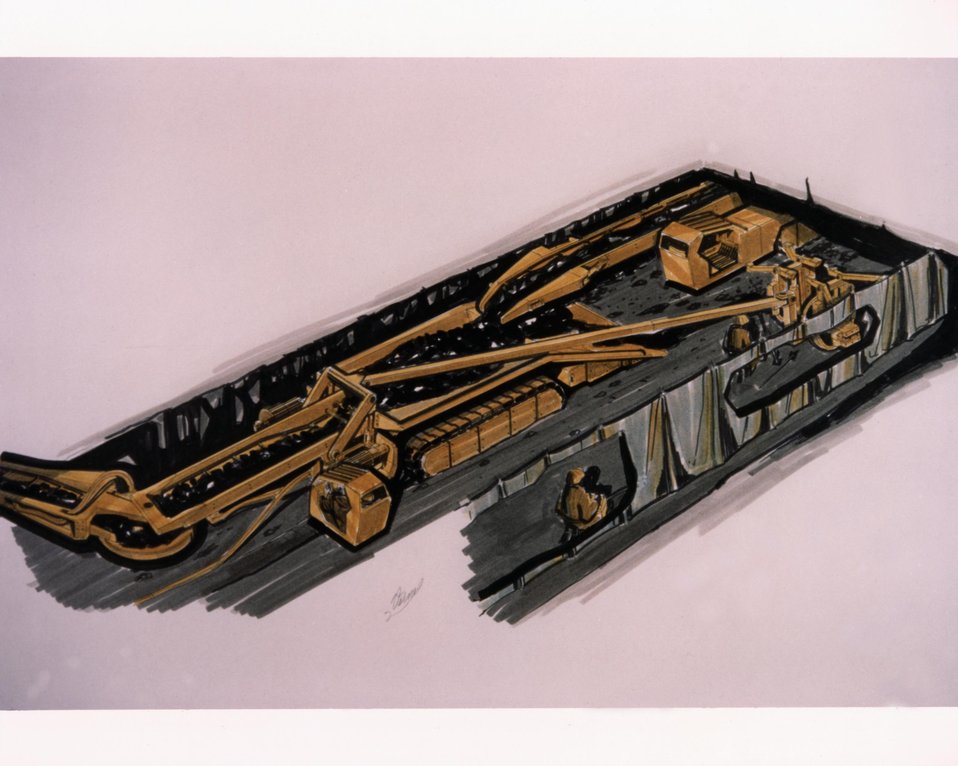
ARTIST'S CONCEPT OF THE DEVICE POSITIONED BETWEEN A CONTINUOUS FACE HAULAGE SYSTEM AND A CONTINUOUS MINING MACHINE.

THE HAULAGE SYSTEM IS ON THE LEFT AND THE CONTINUOUS MINING MACHINE IS ON THE RIGHT. THIS VEHICLE WITH BOLTING CAPABILITY HAS POTENTIAL FOR INCREASING SHIFT PRODUCTION BY ABOUT 33% OVER SECTIONS USING CONTINUOUS FACE HAULAGE SYSTEMS.